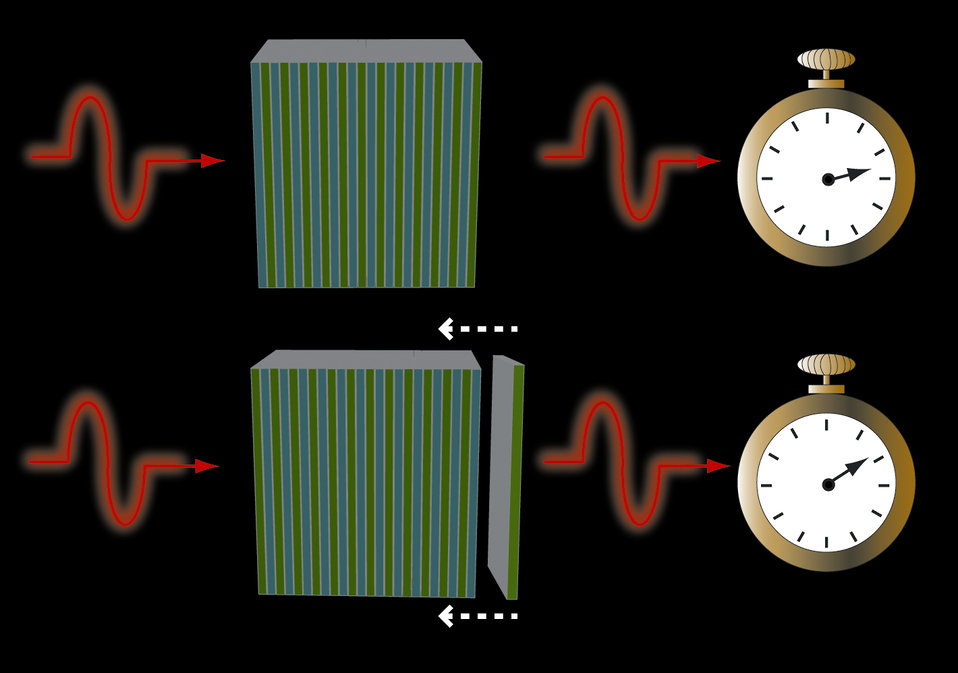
Photons; Faster-than-light

A single photon travels through alternating layers of low (blue) and high (green) refractive index material more slowly (top) or quickly (bottom) depending upon the order of the layers. A strategically placed additional layer (bottom) can dramatically reduce photon transit time.